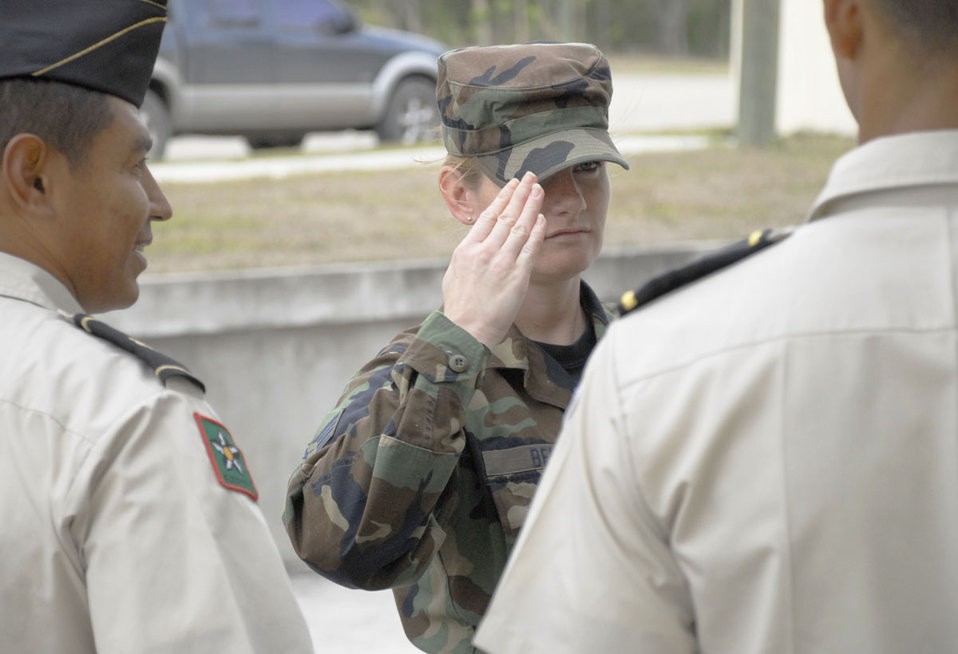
American servicemembers visit Honduran military academy

Staff Sgt. Sonja Berry salutes a Honduran officer during an information exchange April 16 at the Honduran military training academy in Tegucigalpa, Honduras. Sergeant Berry is a member of Joint Task Force-Bravo from Soto Cano Air Base, Honduras. During her visit, she got a glimpse into the daily life of academy cadets preparing as future leaders of the Honduran army and took a great interest into the training female cadets receive at the academy. Females were first allowed into the academy in 1998.